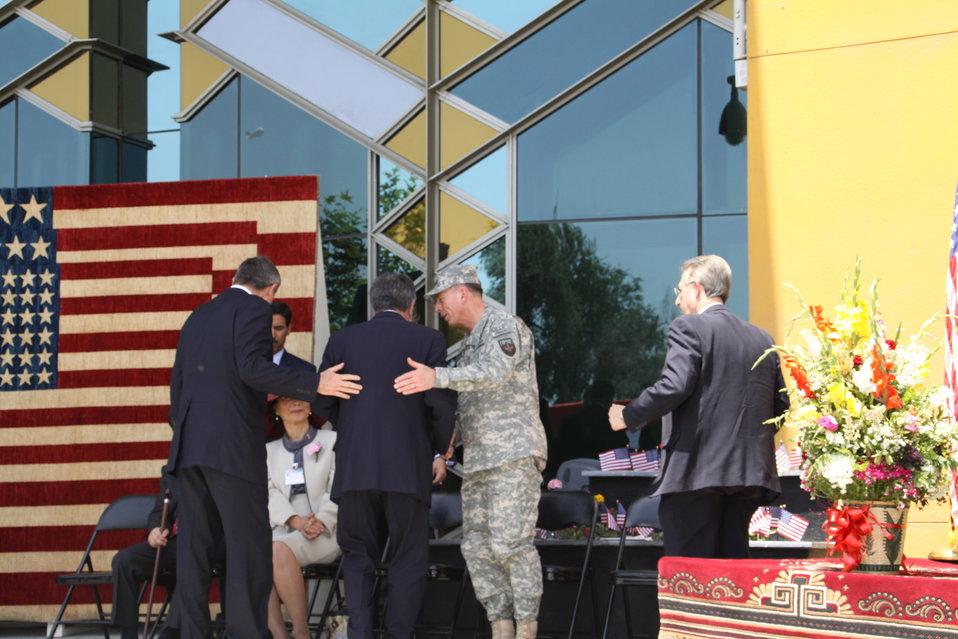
Kabul Official July 4th Celebration